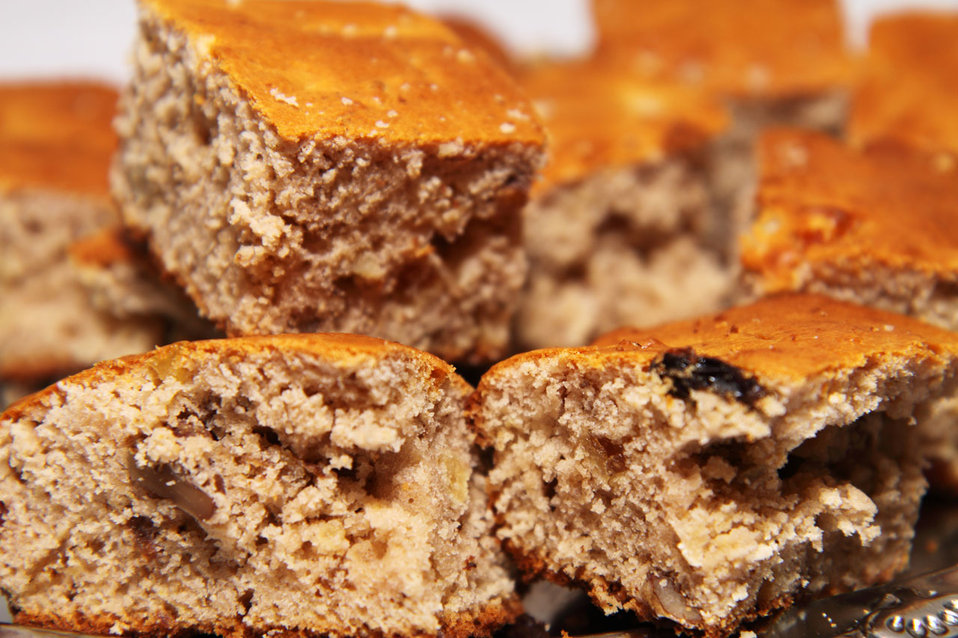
Cake

Several fancy cakes with nuts.